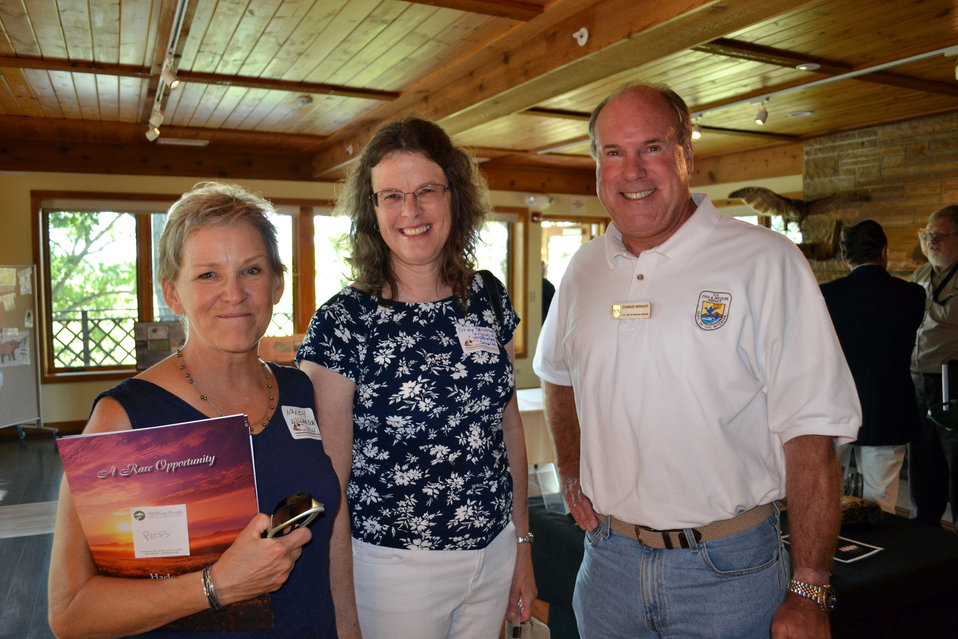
With a LOT of help from our friends!

Deputy Director Charlie Wooley meets with founders of Friends of Hackmatack.